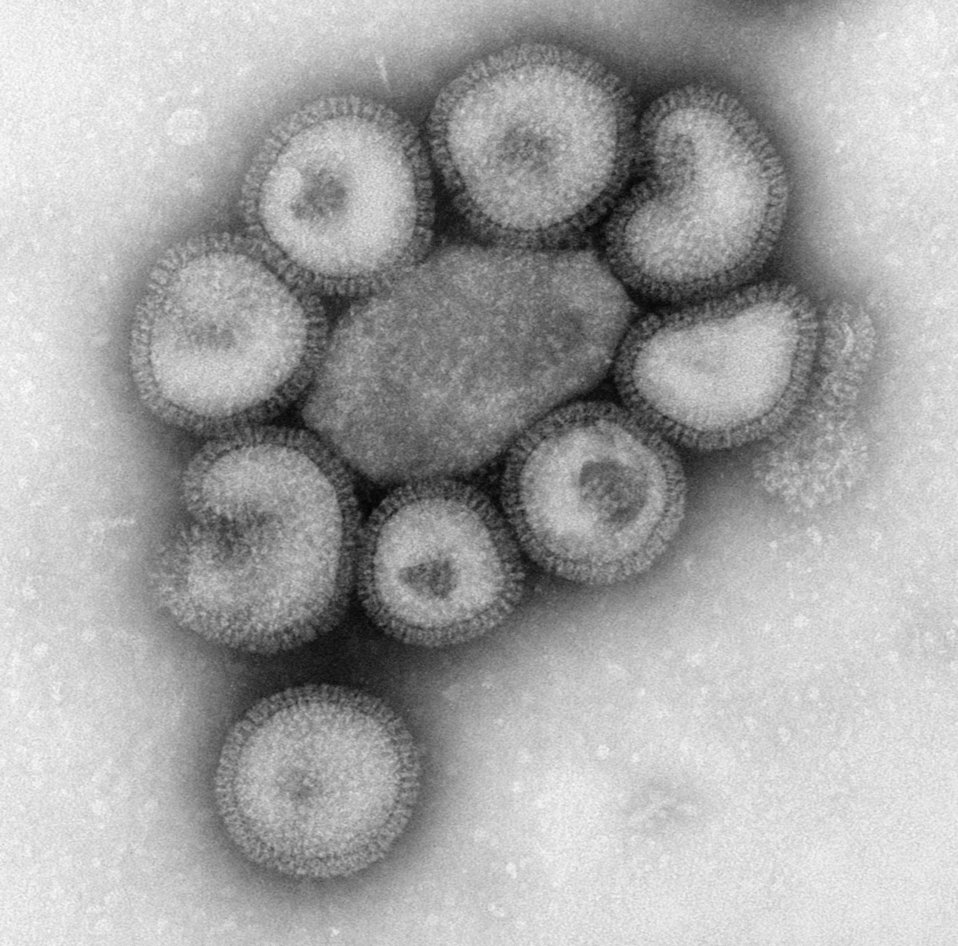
This negative-stained transmission electron micrograph (TEM) depicts the ultrastructural details of a number of influenza virus particles, or 'virions'. A member of the taxonomic family Orthomyxoviridae, the influenza virus is a single-stranded RNA organismThe flu is a contagious respiratory illness caused by influenza viruses. It can cause mild to severe illness, and at times can lead to death. The best way to prevent this illness is by getting a flu vaccination each fall.Every year in the United States, on average:- 5% to 20% of the population gets the flu- more than 200,000 people are hospitalized from flu complications, and- about 36,000 people die from flu. Some people, such as older people, young children, and people with certain health conditions, are at high risk for serious flu complications. See PHIL 10072 for a colorized version of this image.